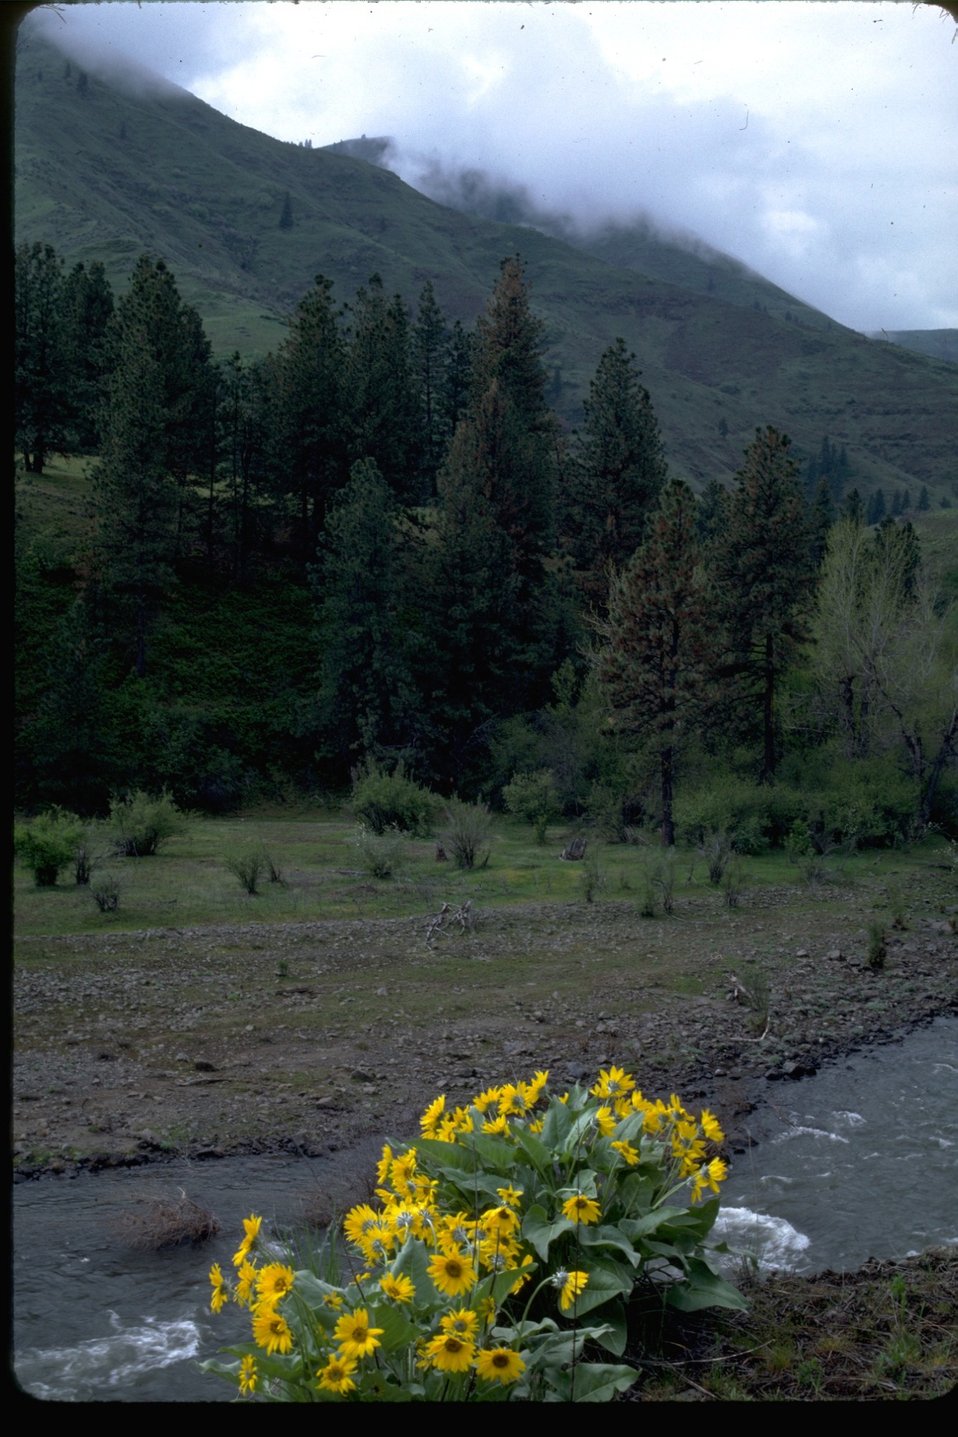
Wildflowers along stream in the Sheep Mountain Wilderness Study Area. OR 6-3.